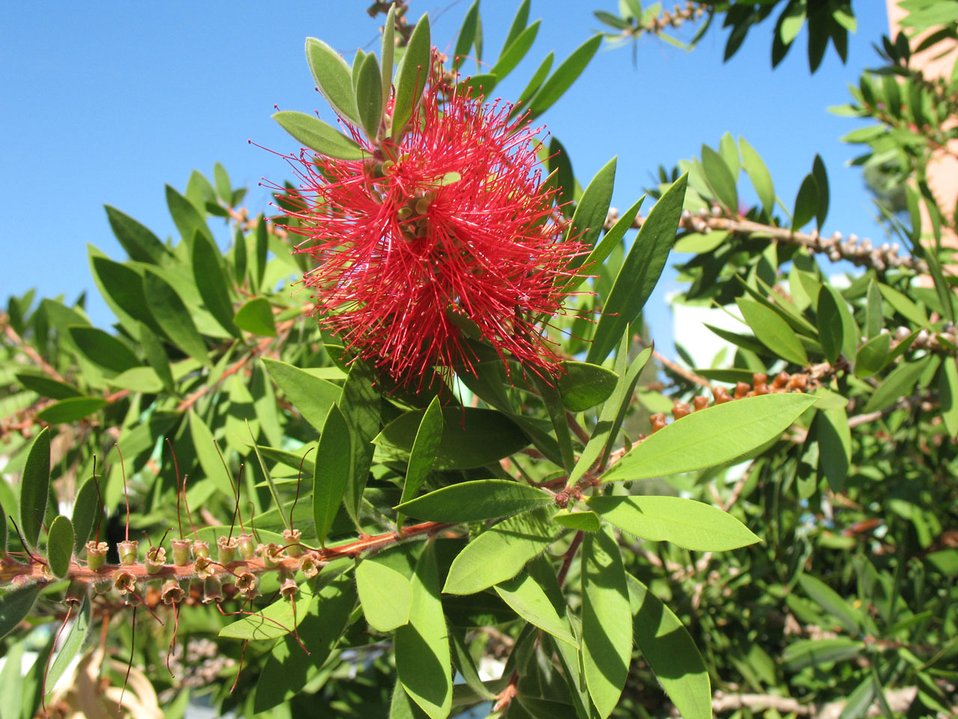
Bottlebrush flower - callistemon citrinus.